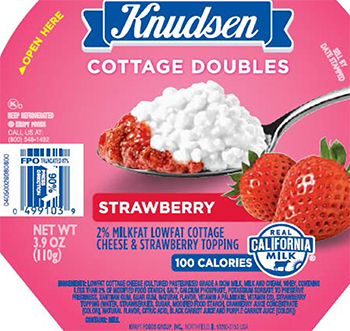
RECALLED – Cottage Cheese products

May 17, 2014 – Product Recall – Kraft Foods Group Voluntarily Recalls Select Cottage Cheese Products Due to Out-of-Standard Storage Temperatures
Certain Knudsen Cottage Cheese, Breakstone’s Cottage Cheese, Simply Kraft Cottage Cheese and Daily Chef Cottage Cheese Products Included in the Recall
.